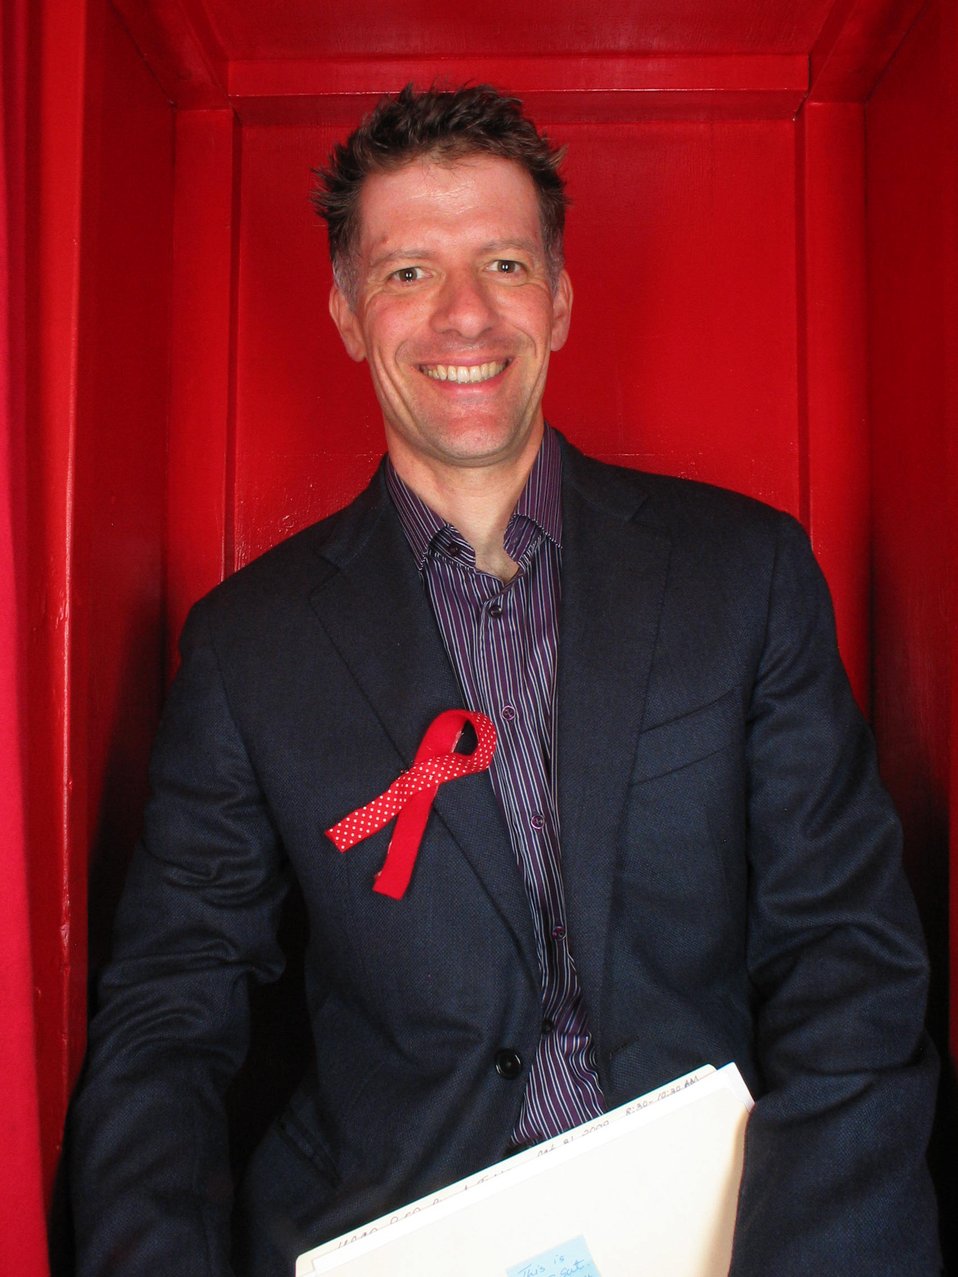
Facing AIDS